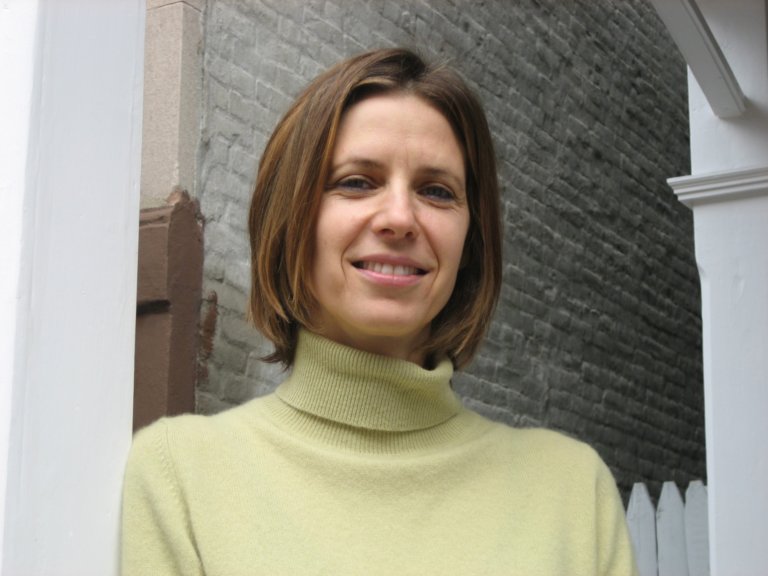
Darcey Steinke (b. 1964), American novelist and journalist